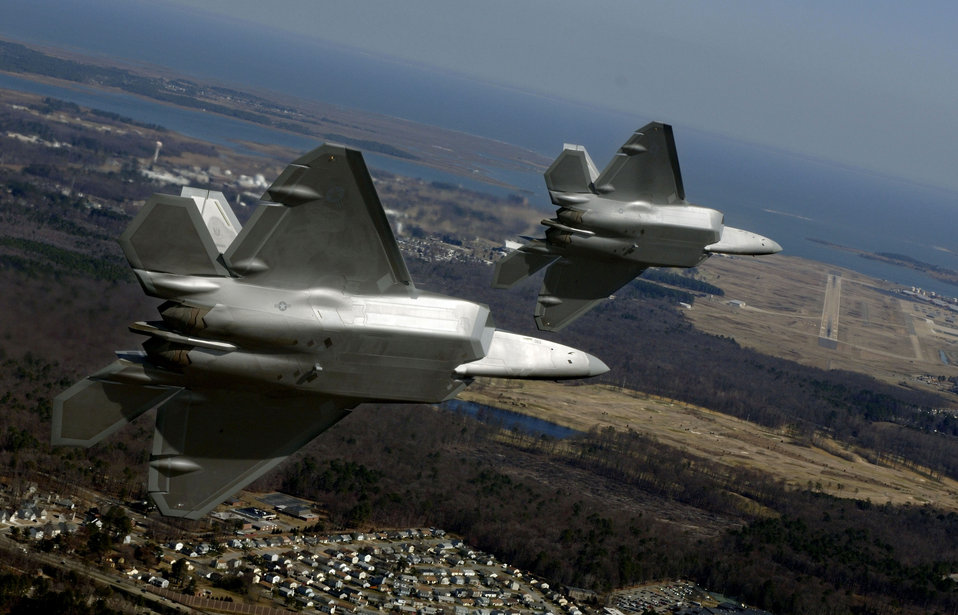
94th Raptors

Lt. Col. Dirk Smith and Maj. Kevin Dolata turn on final approach to Langley Air Force Base, Va., Friday, March 3, 2006 to deliver the first F-22A Raptors assigned to the 94th Fighter Squadron. The 94th is the second squadron at Langley to receive the new stealth fighter.